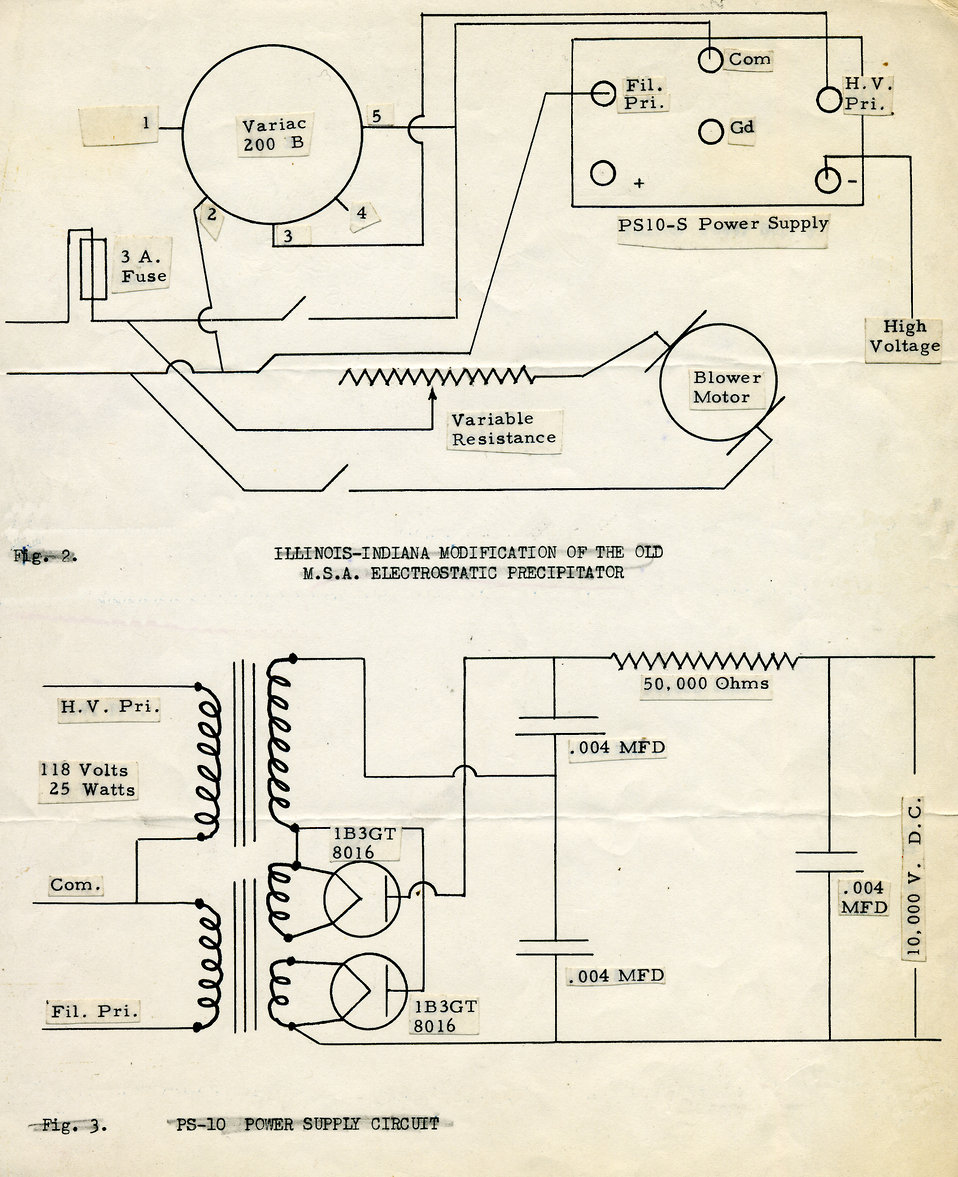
From 1952, this illustrative panel, depicting two historical drawings, was provided by the Center for Disease Control's (CDC), National Institute for Occupational Safety and Health (NIOSH). Figure 2, at the top, diagramed the Illinois-Indiana modification of the old Mine Safety Appliances (M.S.A.) Electrostatic Precipitator. While Figure 3, at bottom, revealed the diagrammatic details of the unit's power supply circuit. These electrical wiring diagrams were examples of the type of measures taken in order to improve the operation of electrostatic precipitators, which are devices that clean unburned airborne particles resulting from industrial burning processes such as coal-fired power plant operations. In the 1940s and 1950s, the Industrial Hygiene Division (IHD) investigated hazards associated with many types of manufacturing activities. This manufacturing design is an example of a measure meant to improve workplace safety.